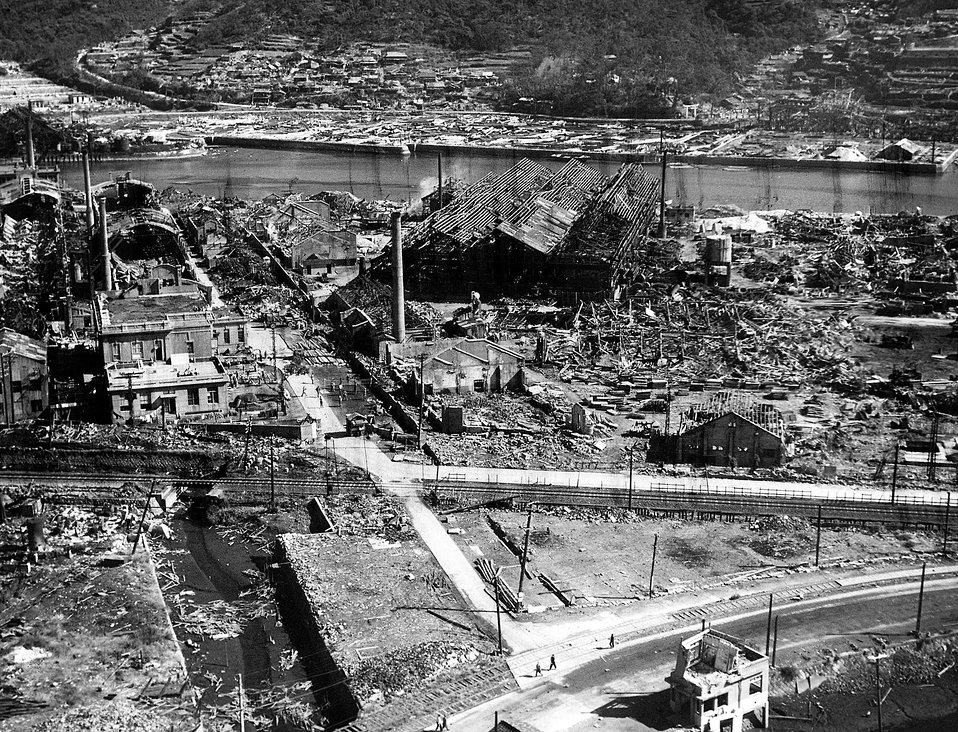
ATOMIC BOMBING OF JAPAN